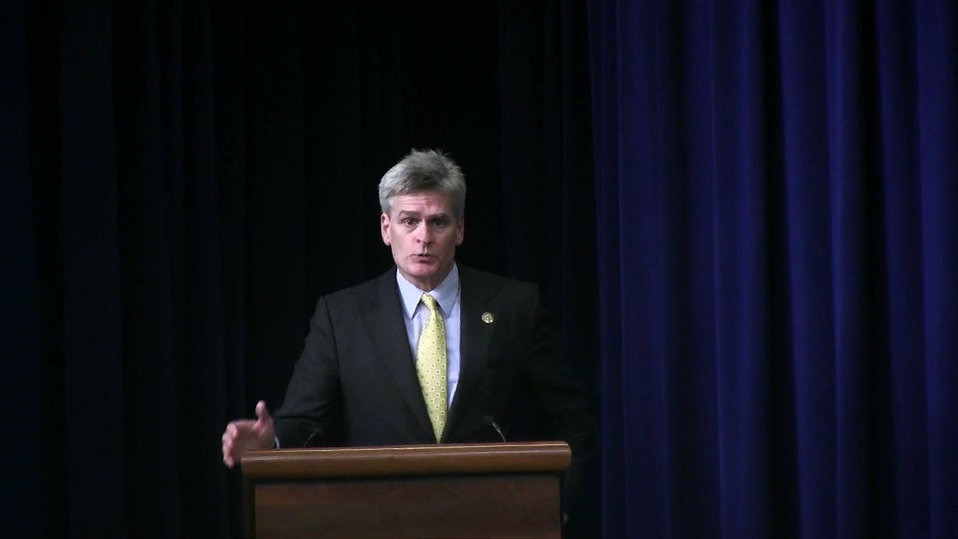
Cassidy